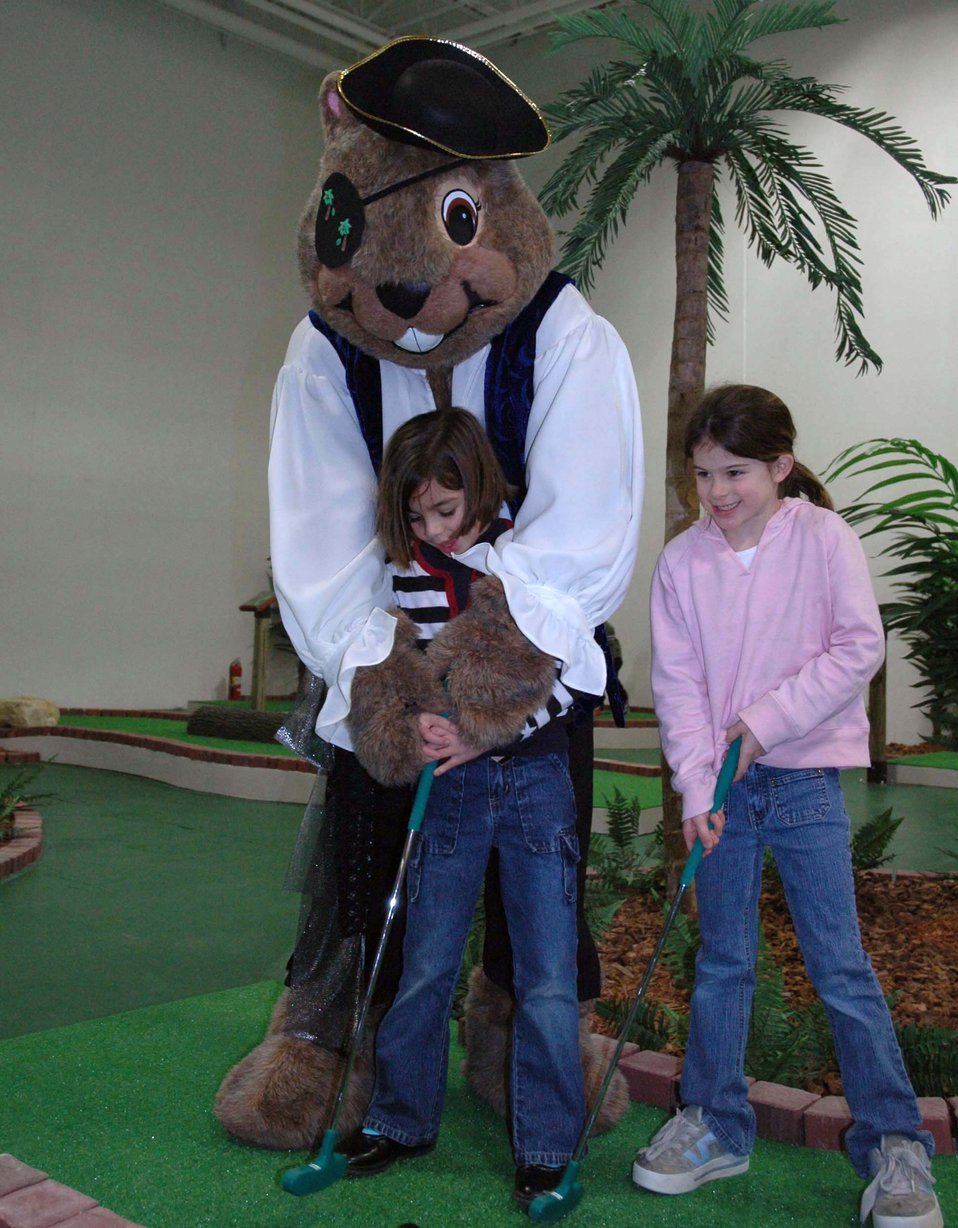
Treasure Island opens at Minot

MINOT AIR FORCE BASE, N.D. -- Darby the Dakrat, the 5th Services Squadron mascot, gives Jacqui Santa Ana (left) and Sidney Rogerson putting tips at the opening day of Treasure Island here Dec. 23. Treasure Island is an indoor recreation center featuring a skating park, miniature golf course, batting cages and rock climbing wall.